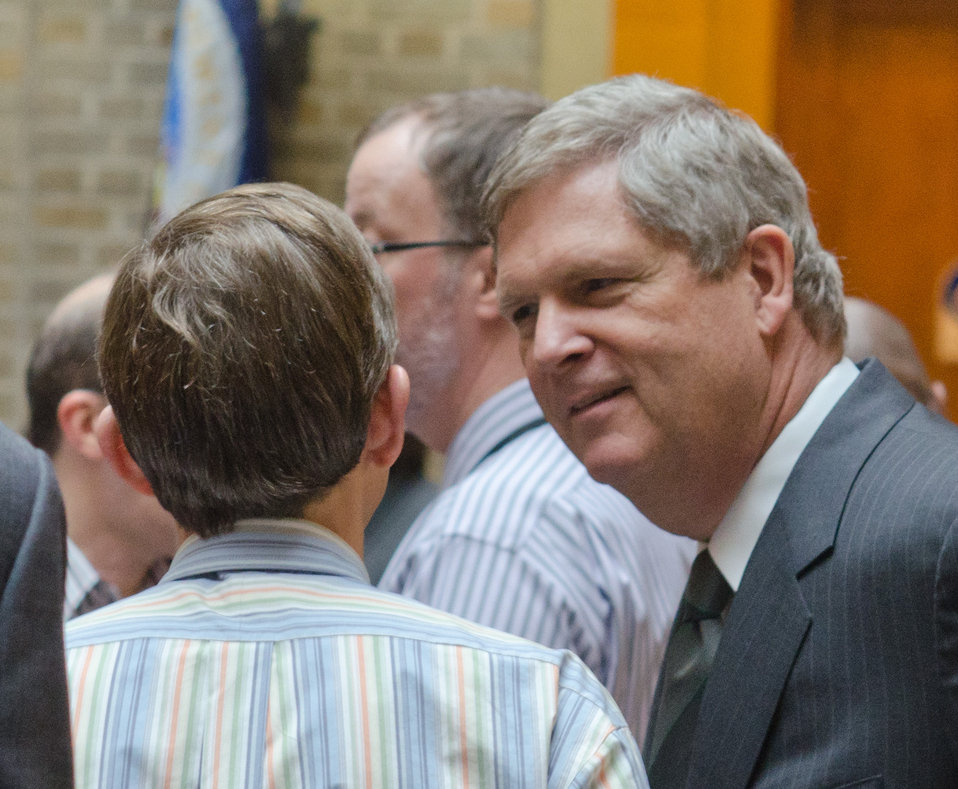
U.S. Department of Agriculture (USDA) Secretary Tom Vilsack speaks with an employee at a get together of colleagues for conversation and a break from the day-to-day routine on the Patio of the Whitten Building in Washington, DC, on Friday, March 25, 2011. Secretary Vilsack sponsored the pop and pretzel event “to help recognize the great work we are doing together for the American people', the event enjoyed standing room only, attendance.